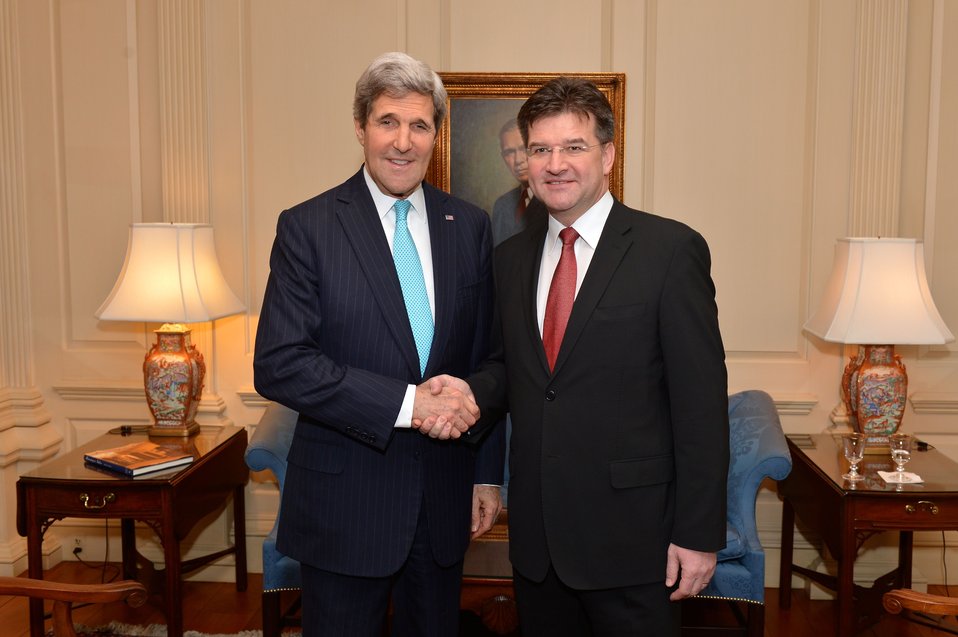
Secretary Kerry Meets With Slovak Deputy Prime Minister and Foreign Minister Lajcak

U.S. Secretary of State John Kerry meets with Slovak Deputy Prime Minister and Foreign Minister Miroslav Lajcak at the U.S. Department of State in Washington, D.C., on March 20, 2014.